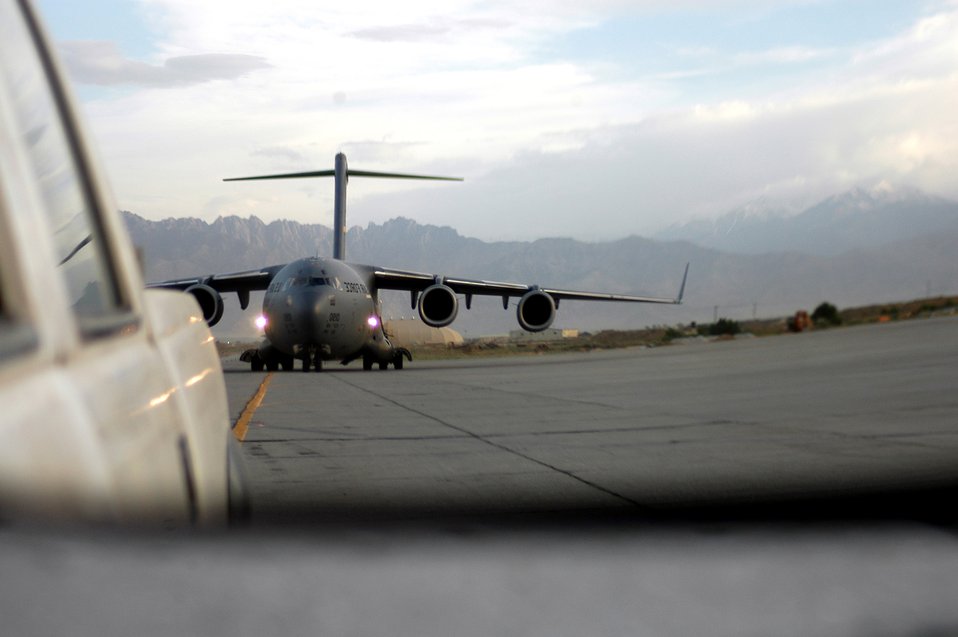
Transient alert provides Bagram its staying power

Seen in the rearview mirror of a